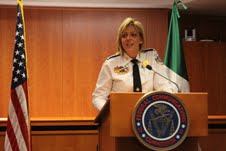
Announcement of Bilateral Initiative to Combat Stolen Mobile Devices 11.13.2012

Chairman GenachowskiDC's Metropolitan Police Department Chief of Police Cathy Lanier .